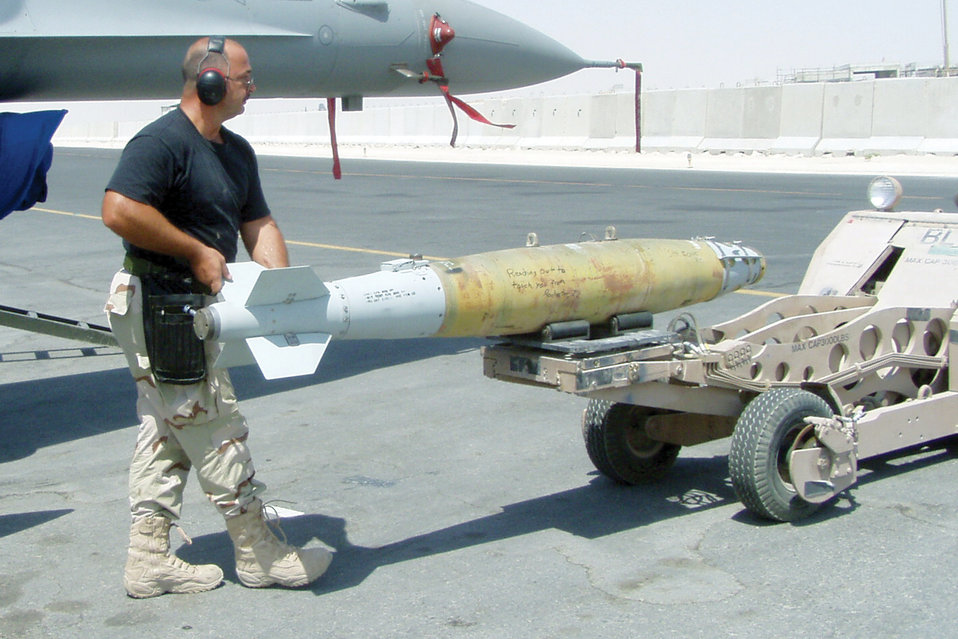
Total force uses first GBU-38 in combat

SOUTHWEST ASIA -- Tech. Sgt. Mark Worley unloads a GBU-38 from an F-16 Fighting Falcon at a forward-deployed location. He is a load crew chief from the Alabama Air National Guard.